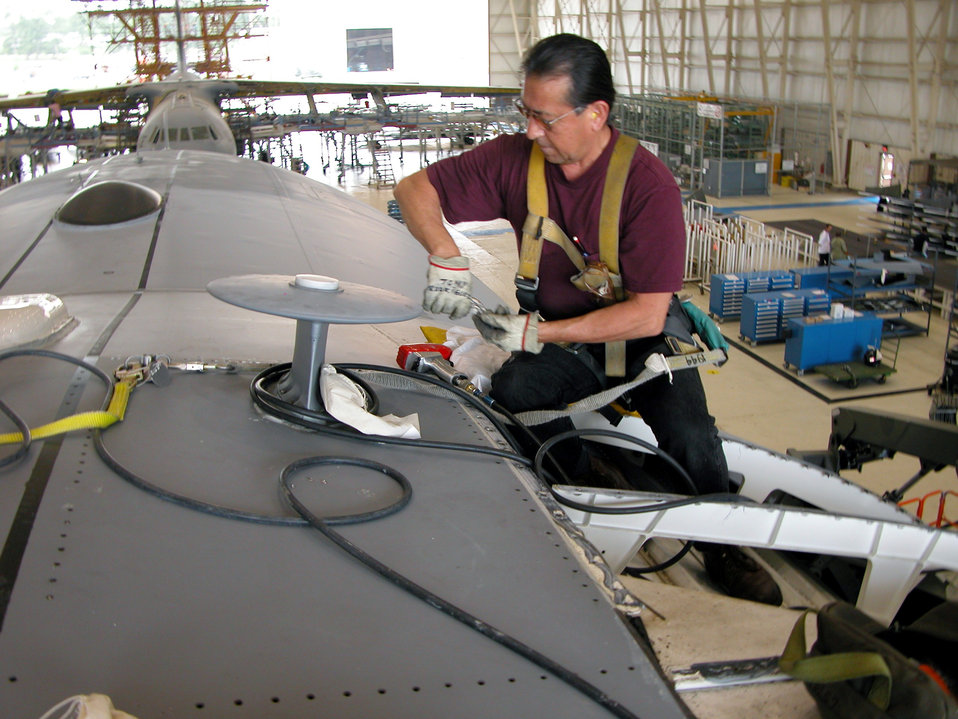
Globemaster maintenance

ROBINS AIR FORCE BASE, Ga. -- Tony Rodriguez, an aircraft mechanic, removes forward-trapezoid panels from atop a C-17 Globemaster III. The aircraft is undergoing 10,000 hours of maintenance at the Warner Robins Air Logistics Center here. Maintenance includes receiving upgraded avionics, an analytical condition inspection, weight and balance checks, and thrust reverser repairs.